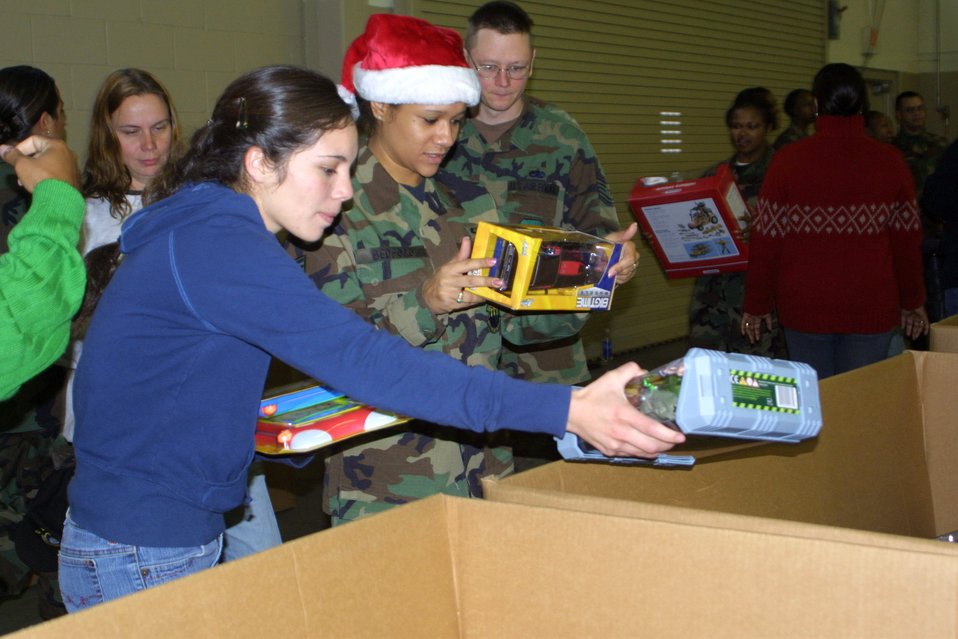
Toy Drop

POPE AIR FORCE BASE, N.C. -- First Lt. Jamie Kelley (left) and Tech Sgt. Toyna Alston sort through toys donated to Operation Toy Drop. Sergeant Alston is with the 743rd Aircraft Maintenance Squadron, and Lieutenant Kelley is with the 43rd Mission Support Squadron.